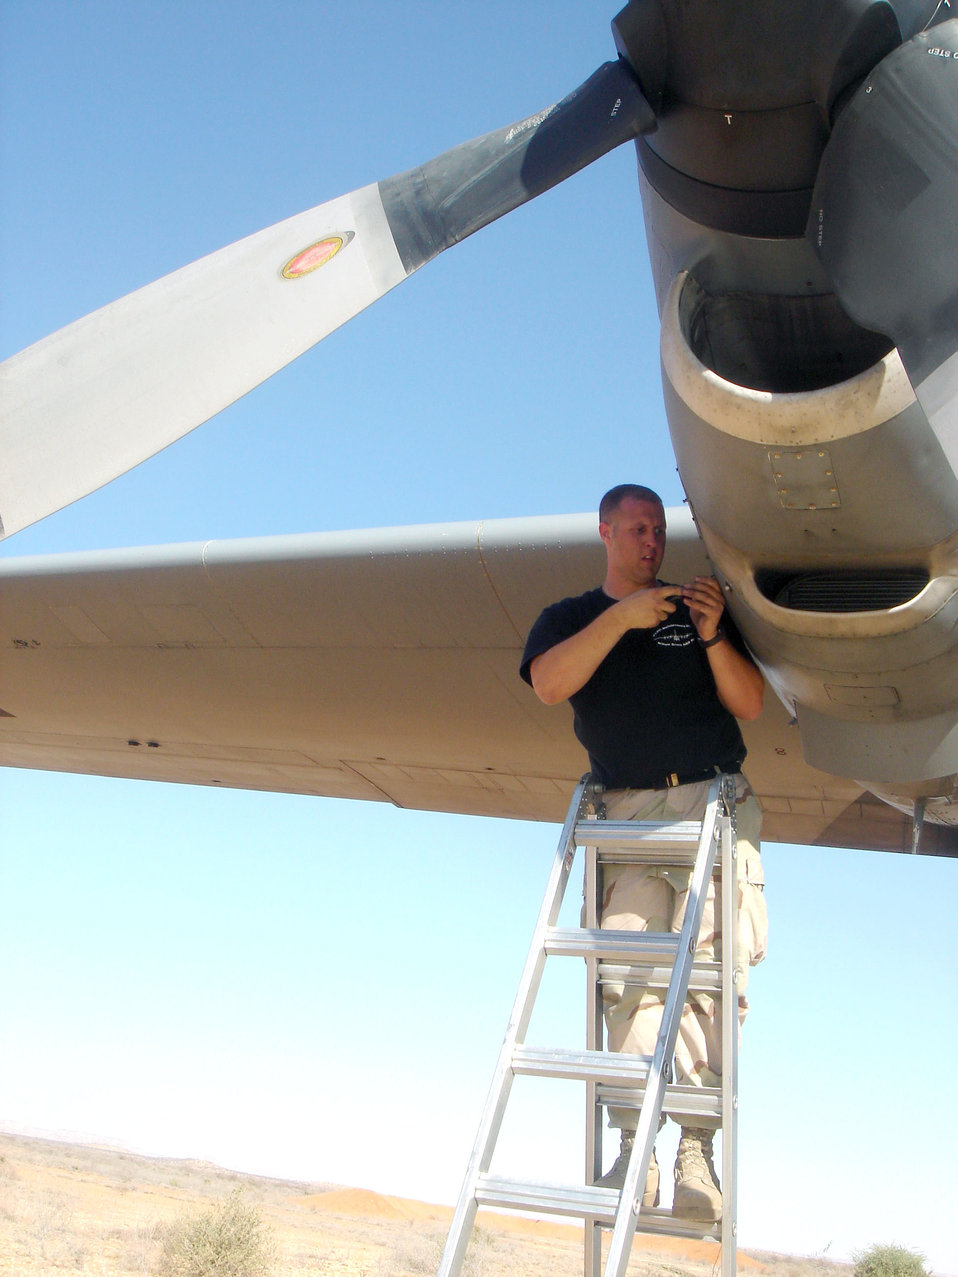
Crew chiefs keep C-130s flying

Senior Airman Christopher Sutton removes a panel on a malfunctioning C-130 Hercules engine to determine the problem. Airman Sutton is a crew chief with the 746th Aircraft Maintenance Unit.